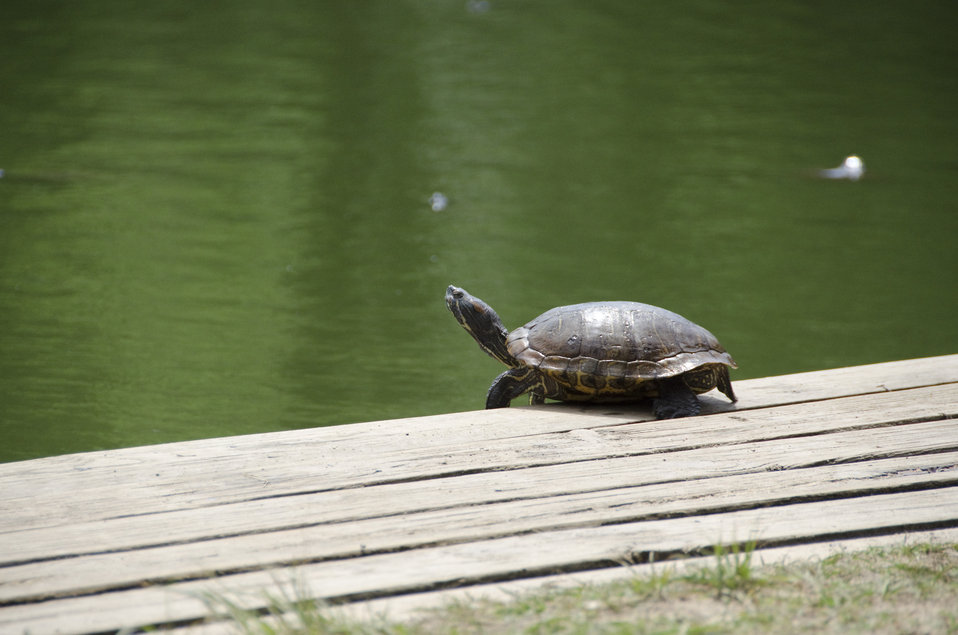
Sunbathing turtle

A red eared slider basks in the sun at the Louisiana turtle farm.